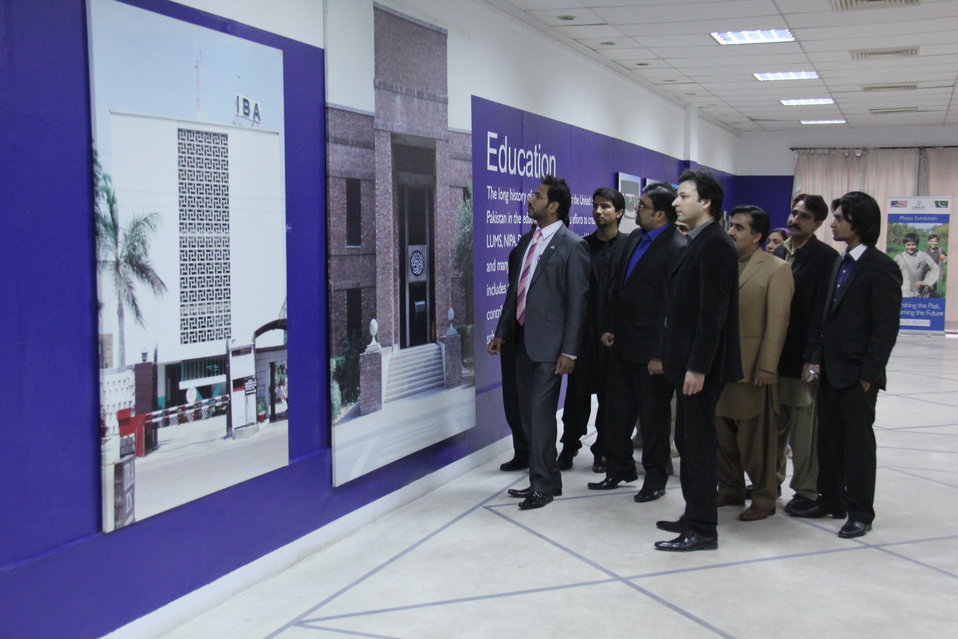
One of the most lasting impacts of the United States' support was through the establishment of Pakistan's university system. U.S.-supported universities include IBA, LUMS, Jinnah Post-Graduate Medical Center, and many others.